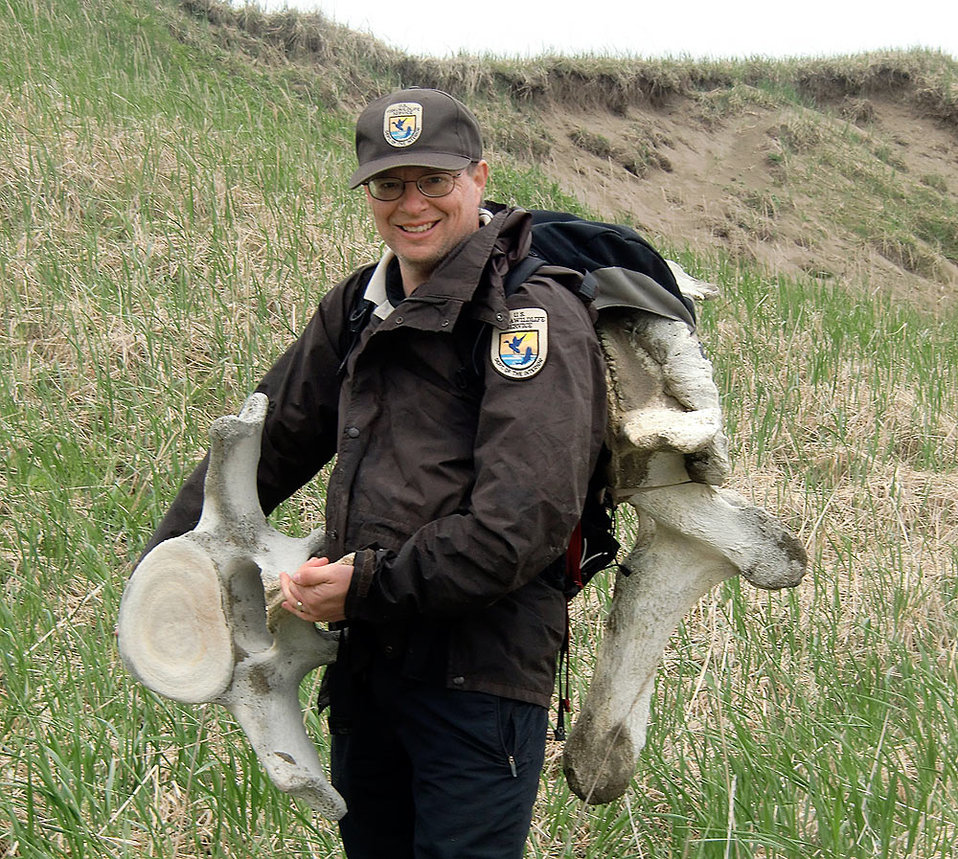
Michael Swaim-Alaska Region

Air Force veteran Michael Swaim is now a Wildlife Biologist at Togiak National Wildlife Refuge.